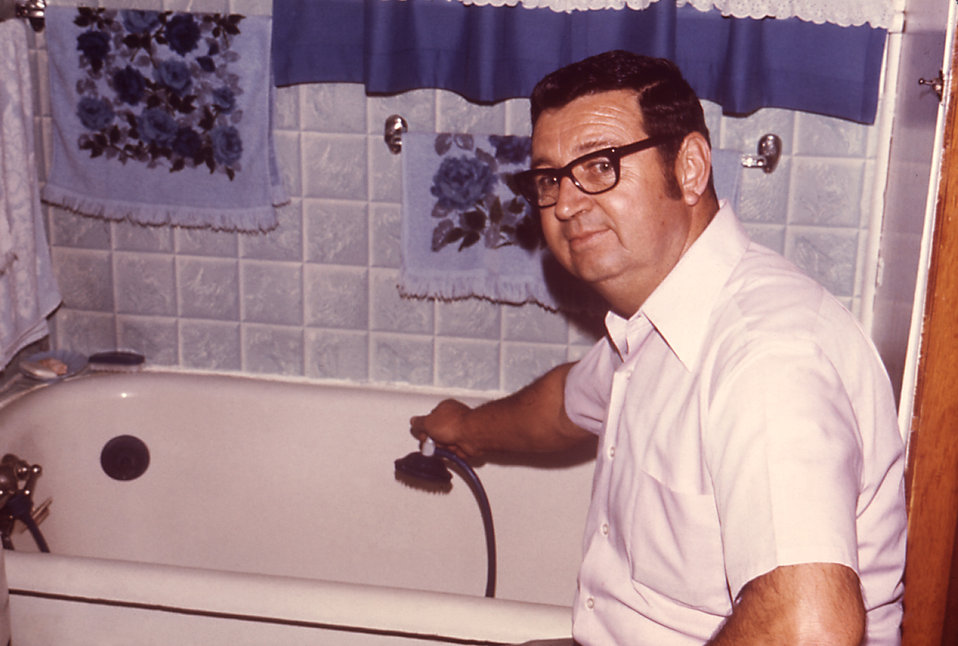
This resident is indicating the first evidence of chlordane contamination in a local Chattanooga, Tenn. water supply.